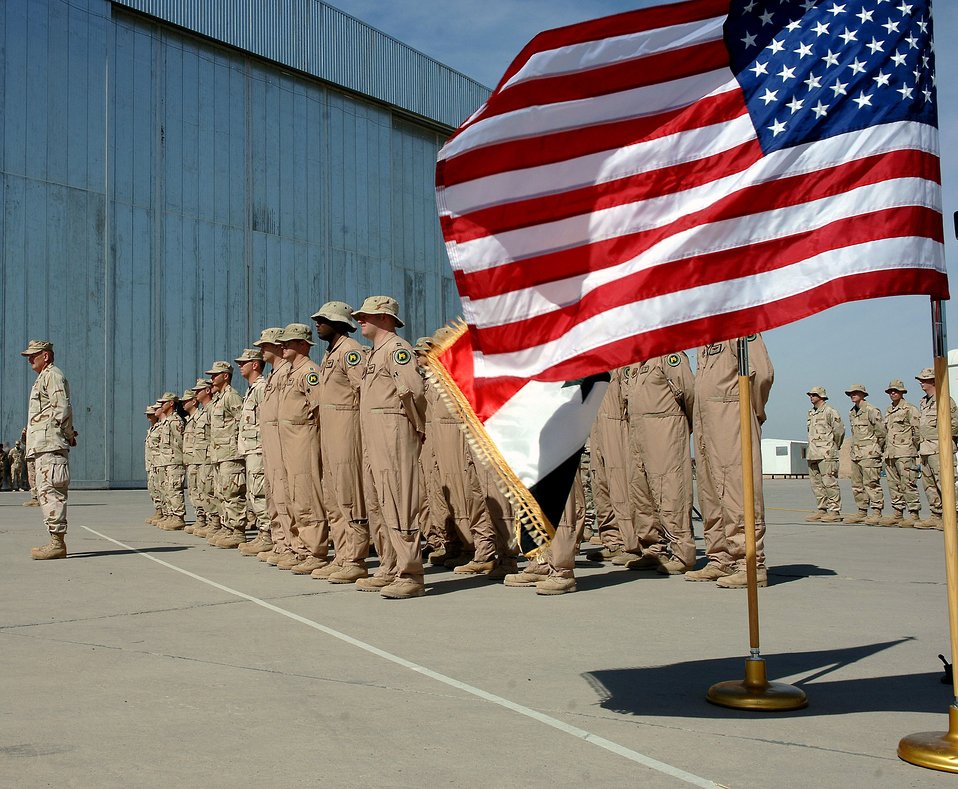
Iraqi Air Force history

Airmen from the Multinational Security Transition Command Coalition Air Force Transition Team stand in formation during the formal stand-up of New Al Muthana Air Base, Iraq, Tuesday, March 7, 2006. The ceremony recognized the activation of the air base and the Iraqi 23rd Squadron of C-130E Hercules aircraft. The event culminated more than a year of training by U.S. Airmen with the Multinational Security Transition Command Coalition Air Force Transition Team. This is the first post-Saddam Hussein era Iraqi Air Force base and squadron.